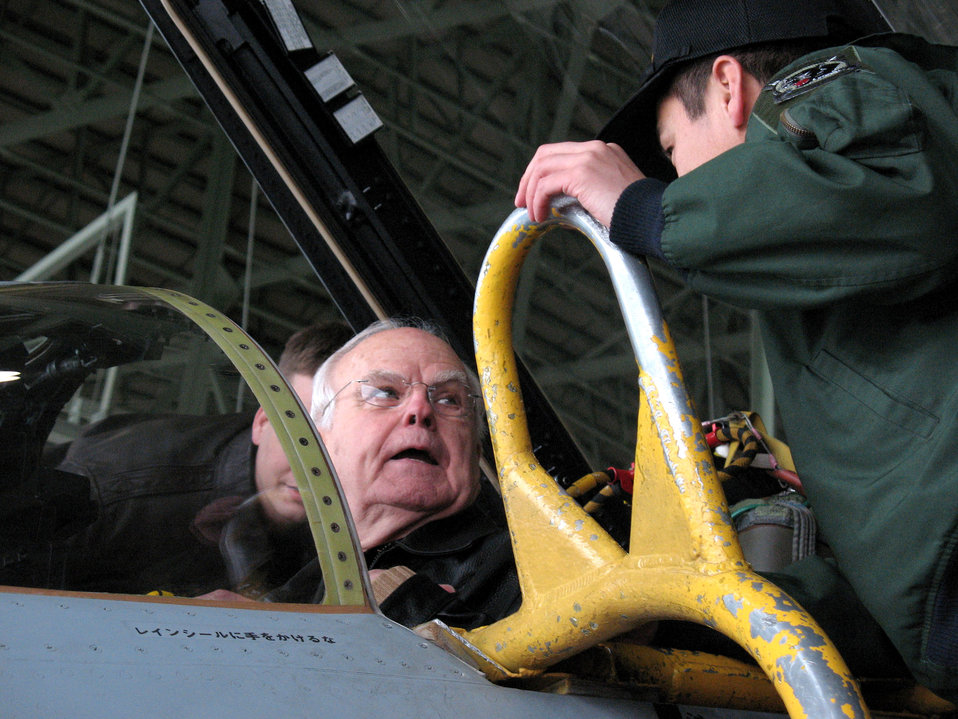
Vietnam veteran's experiences guide today's Airmen

Retired Col. James Gilliland shares war stories with an RF-4C pilot from the Japanese Air Self Defense Squadron at Misawa Air Base, Japan. Colonel Gilliland flew 100 reconnaissance missions in the RF-4C during the Vietnam War.